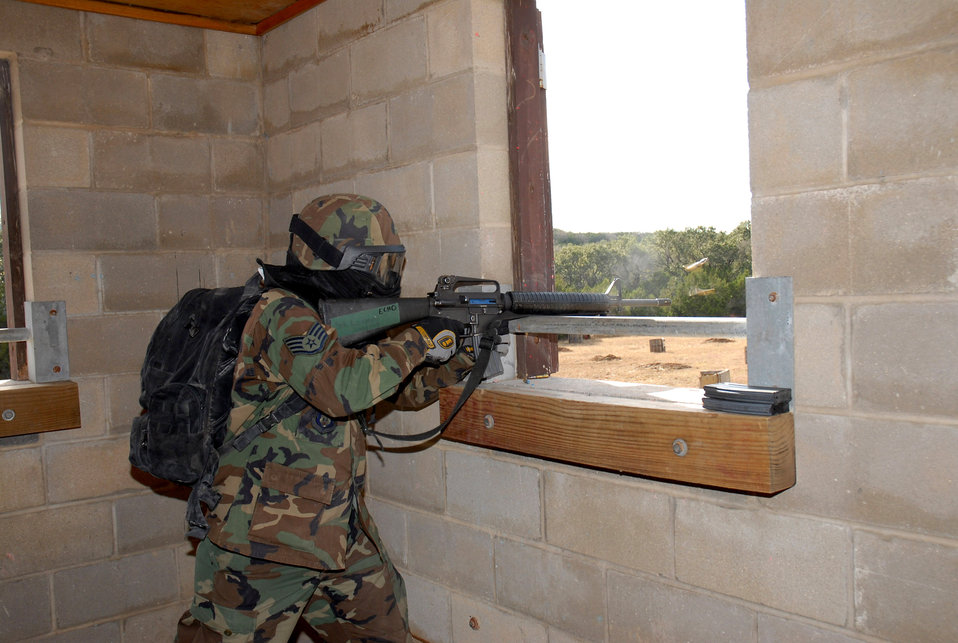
Battlefield training makes warriors out of Airmen

Instructor Staff Sgt. Felix Villarreal acts as an opposition force member during the final day of the Common Battlefield Airman Training Bridge course field training excercise Dec. 20 at Camp Bullis, Texas. Students use the skills taught to them throughout the week to maneuver into a hostile village.